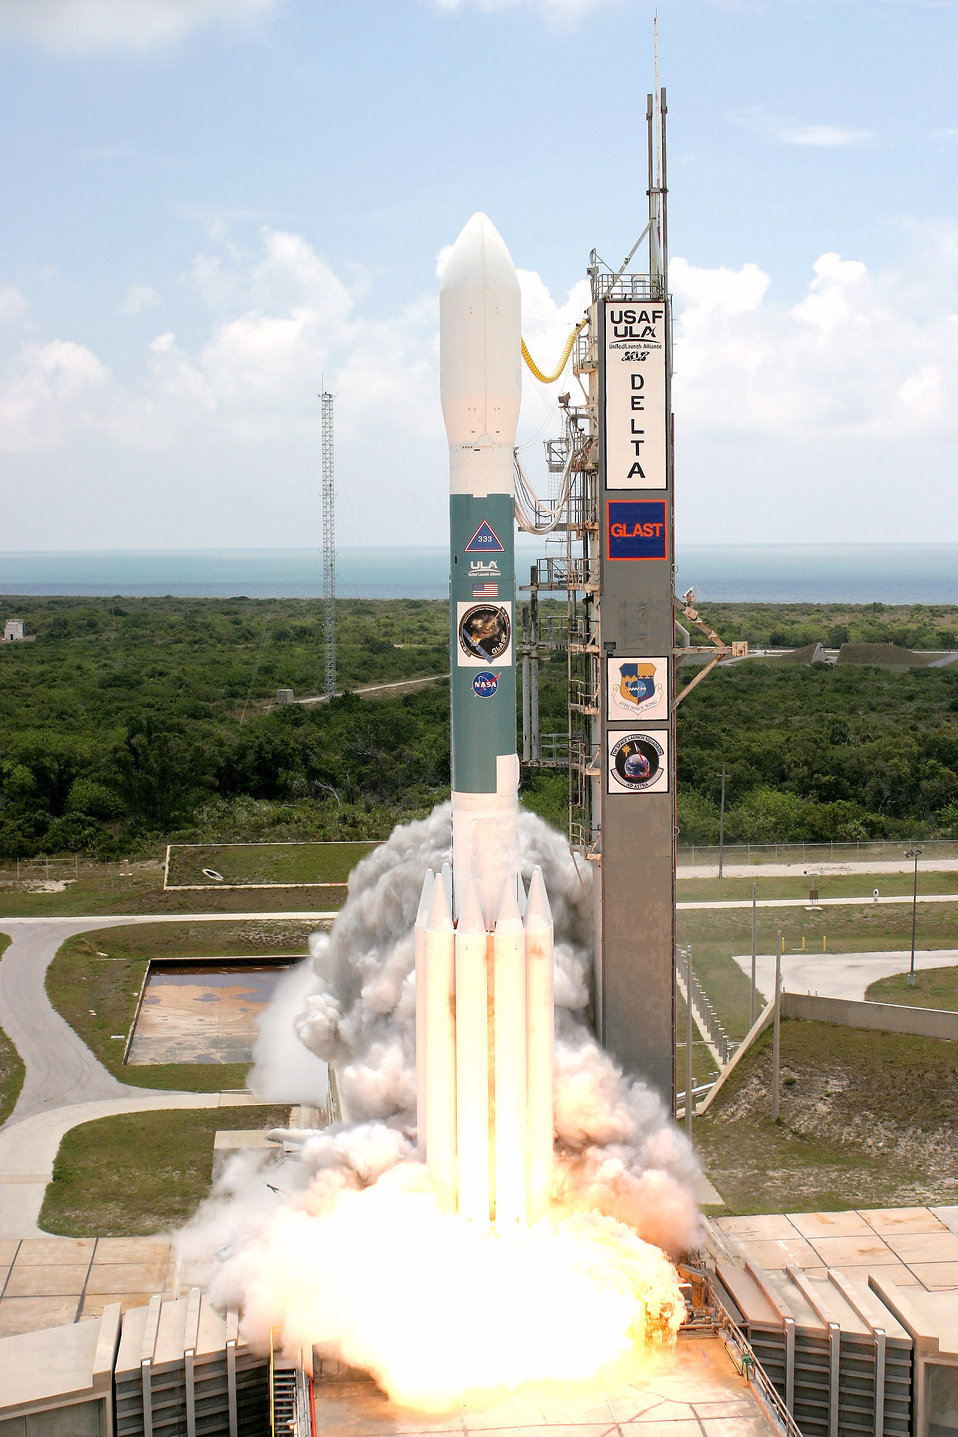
Air Force launches NASA gamma ray study

A Delta II launches from Cape Canaveral Air Force Station June 10 carrying a Gamma-ray Large Area Space Telescope intended to study gamma ray phenomenon. The GLAST data will enable scientists to answer persistent questions across a broad range of topics, including supermassive black-hole systems, pulsars, the origin of cosmic rays and searches for signals of new physics.